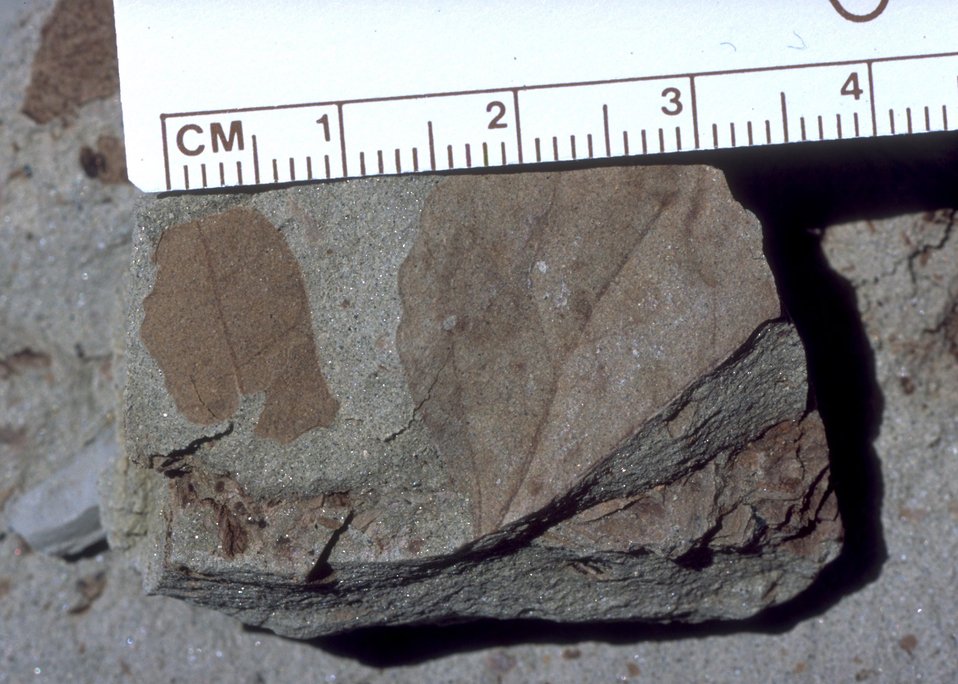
Close up of fossil vegetation, Cedar Ridge Paleo area, Worland Field Office.